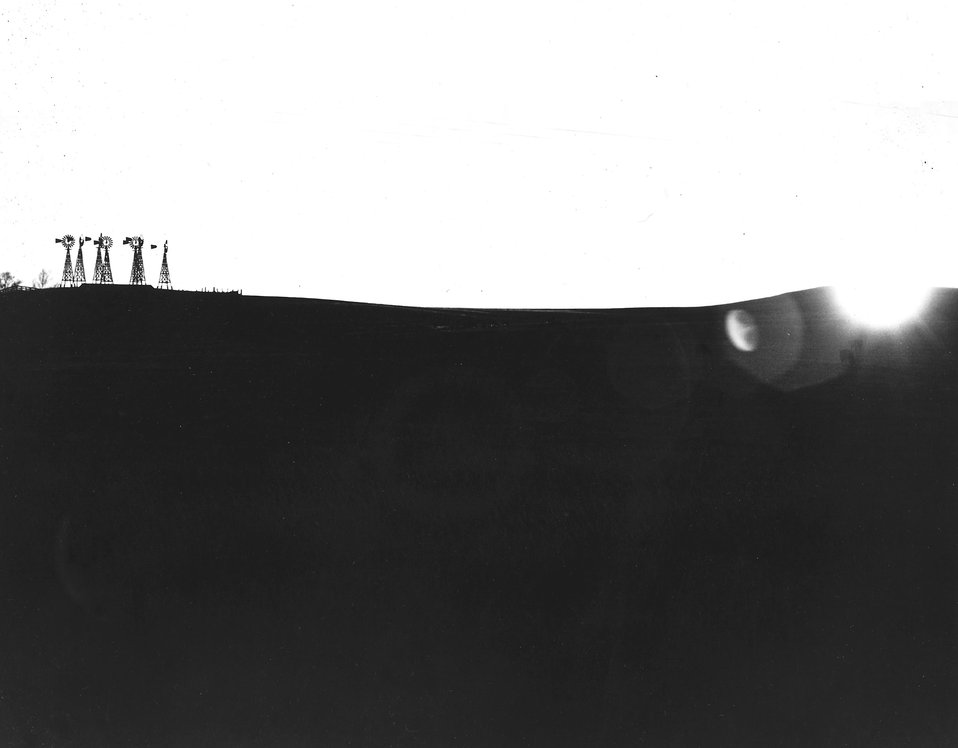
Stark rigs scratch the sky on a ranch near Harrison, Nebraska. c. Undated